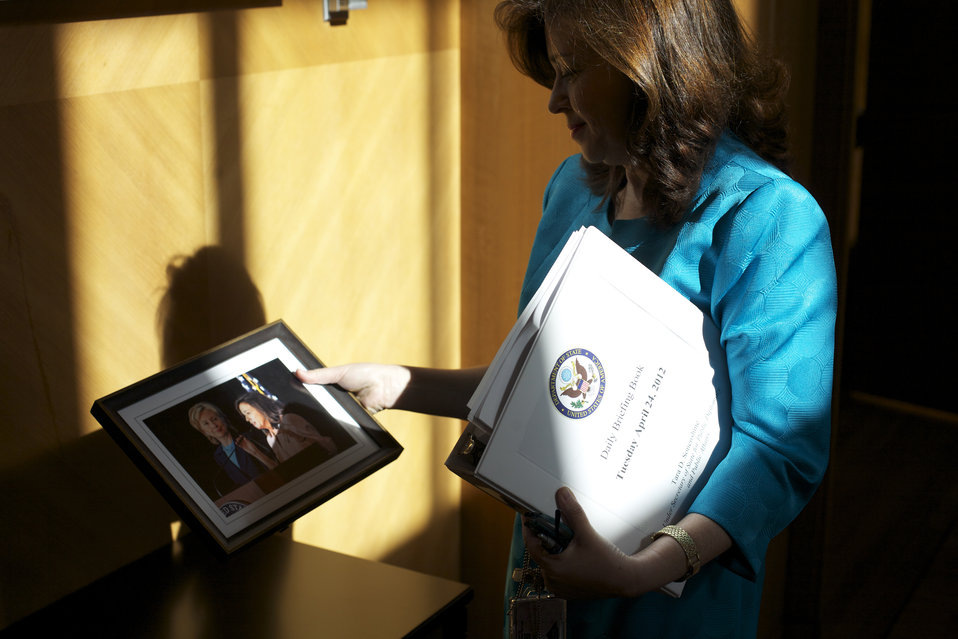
Under Secretary Sonenshine Prepares for her Swearing-In Ceremony

Under Secretary of State for Public Diplomacy and Public Affairs Tara Sonenshine prepares for her swearing-in ceremony with Secretary of State Hillary Rodham Clinton at the U.S. Department of State in Washington, D.C., on April 24, 2012.